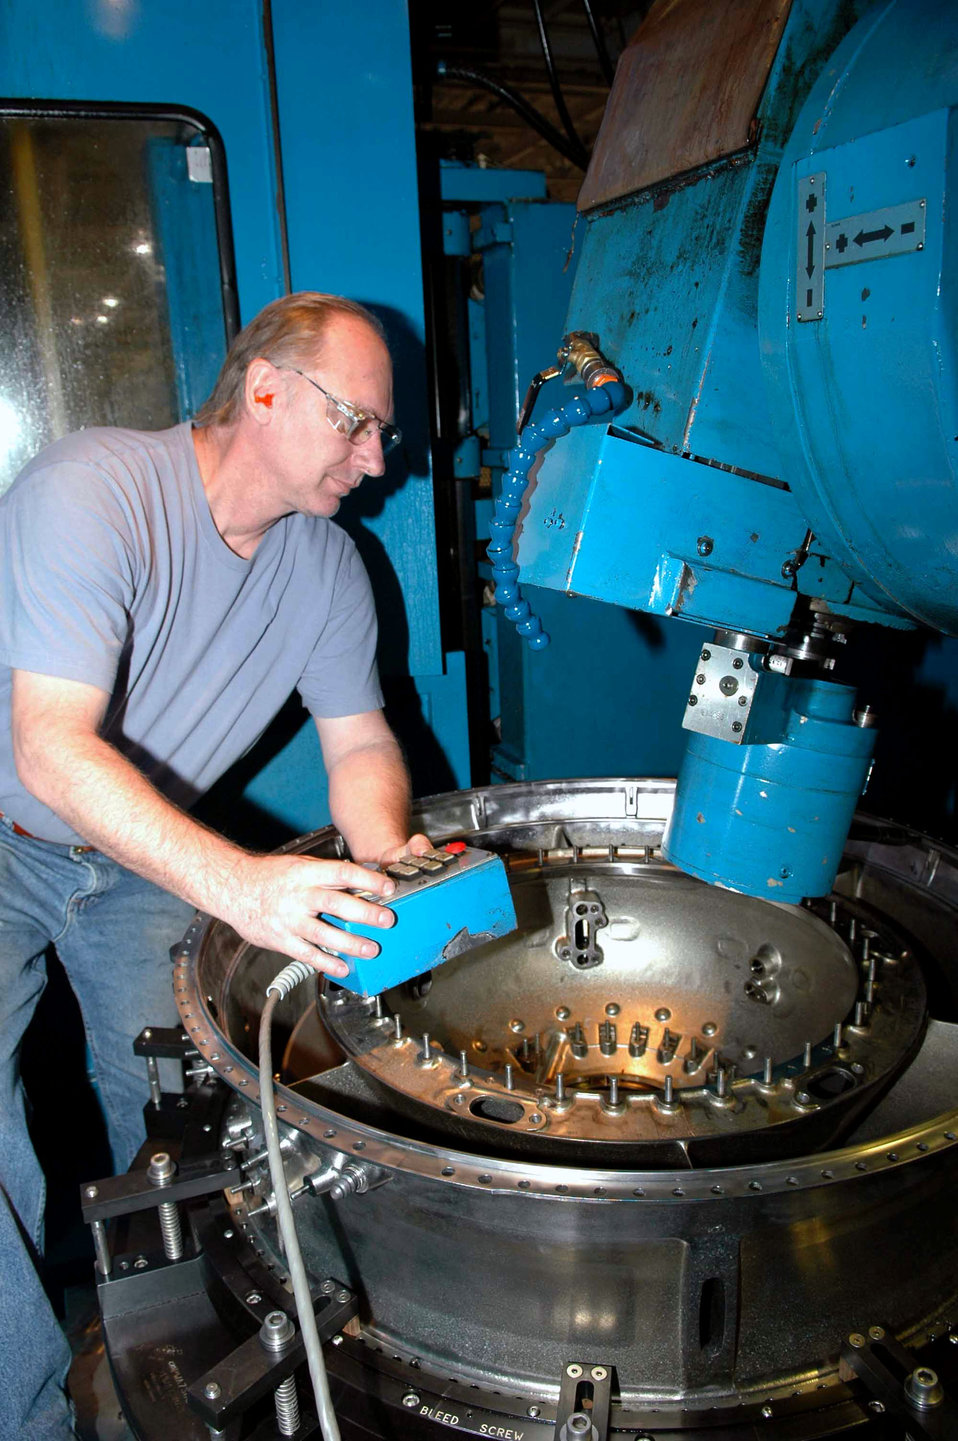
Tinker unit designs new welding process for B-2

Mike Kraus makes adjustments on a five-axis milling machine prior to working on an F119 intermediate compressor. Mr. Kraus is a machinist with the 547th Propulsion Maintenance Squadron.